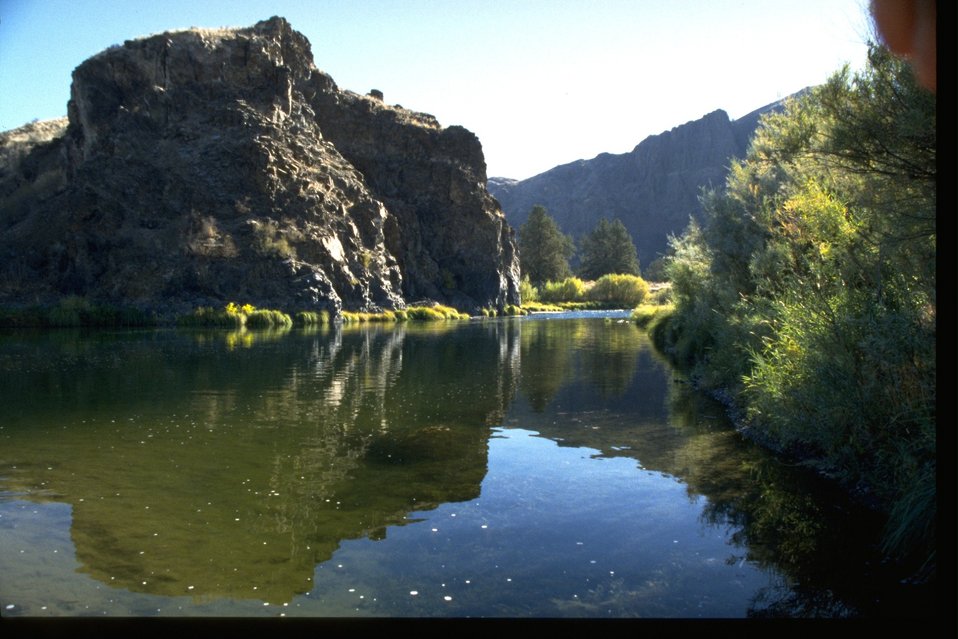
Vegetation along the banks of the John Day River under cliffs near Bridge Creek.